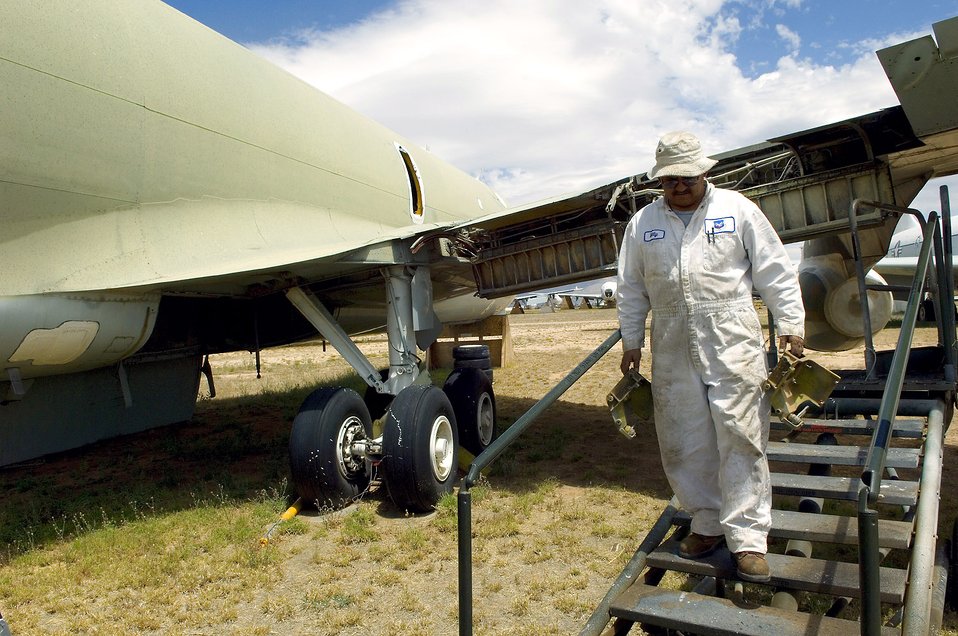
KC-135 Stratotanker

Aircraft mechanic Bill Amparano removes support brackets from the wings of a preserved KC-135E Stratotanker at the Aerospace Maintenance and Regeneration Group storage site at Davis-Monthan Air Force Base, Ariz. The brackets will be shipped to Tinker Air Force Base, Okla., where they will be used to bring a broken KC-135R back to flying status. AMARG's mission has evolved beyond merely the storage and preservation of aircraft. Today the center provides customer services including aircraft regeneration which means restoring aircraft to flying status, limited depot-level maintenance, parts reclamation, historic storage and disposal functions.